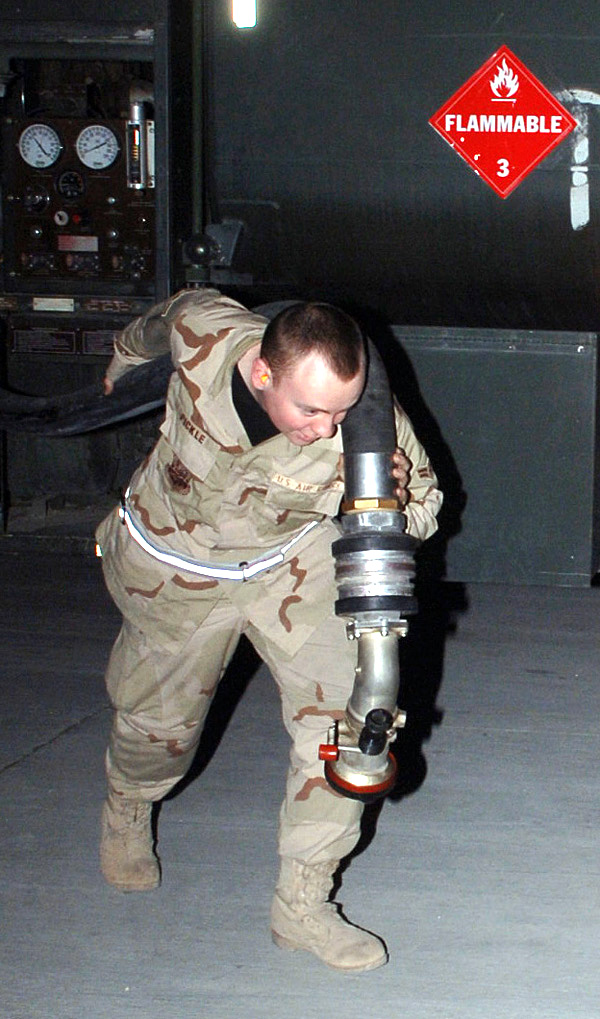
Fueled and ready

Airman 1st Class Jay Pickle pulls out a fuel hose to fill an A-10 Thunderbolt II aircraft. Airman Pickle is a mobile distribution operator with the 455th Expeditionary Logistics Readiness Squadron petroleum oil and lubricant element. The fuels Airmen deliver more than 415,000 gallons of fuel every week.